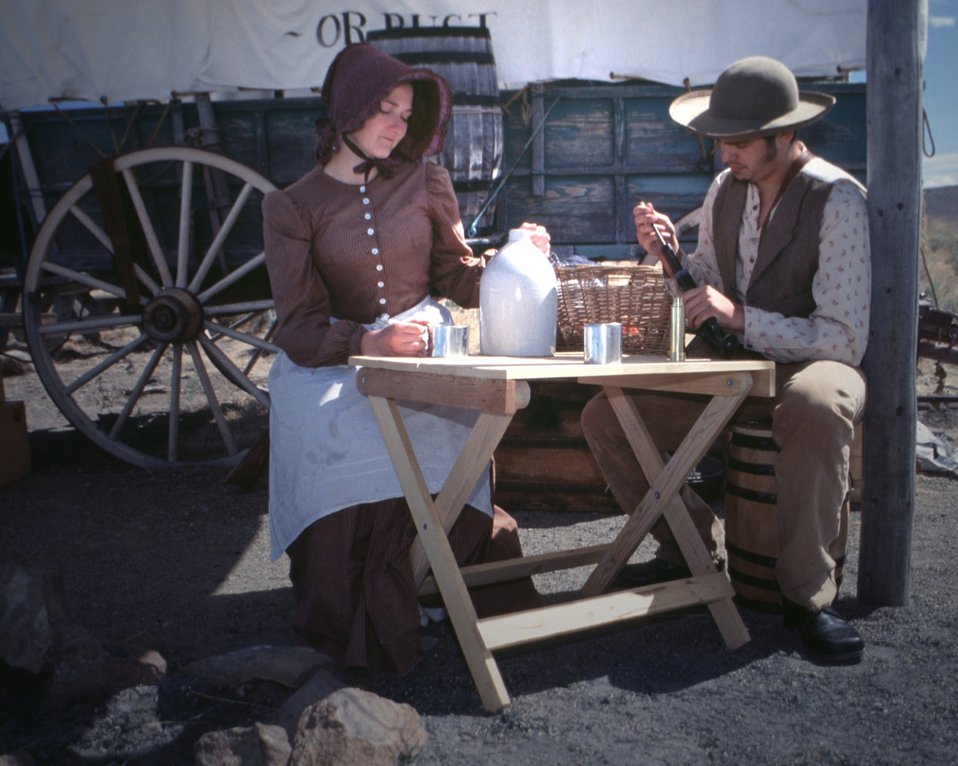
Rebecca Crow and Brandon Kames portray a pioneer couple at a wagon encampment.